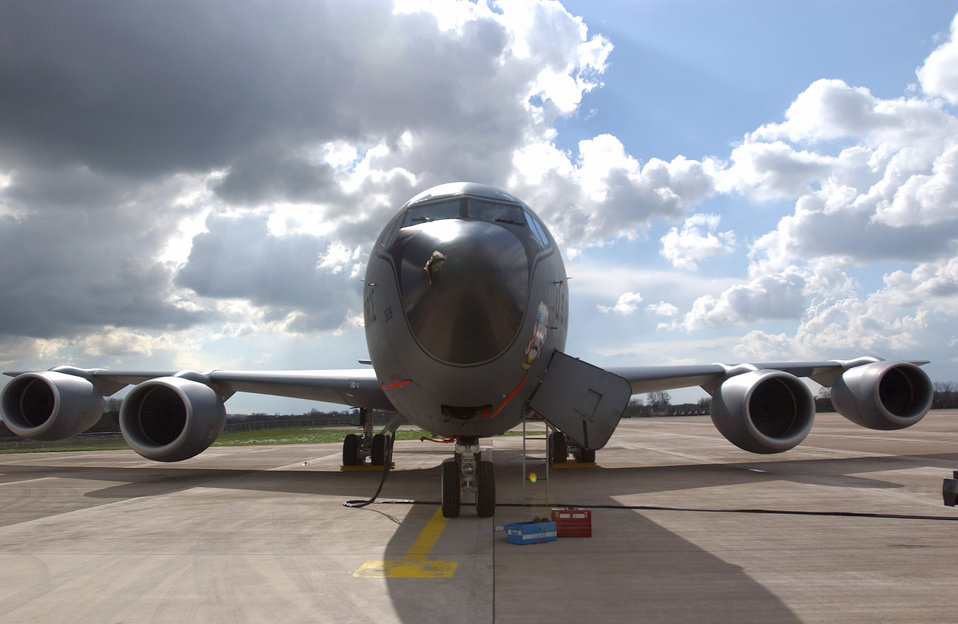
Nose for electricity

ROYAL AIR FORCE FAIRFORD, England -- KC-135 Stratotanker sits on a parking spot awaiting inspection and maintaince here March 24. The seven-inch hole in the nose radome of the aircraft occurred while the plane was landing and was struck by lighting. The pilots lost all weather radar capability.